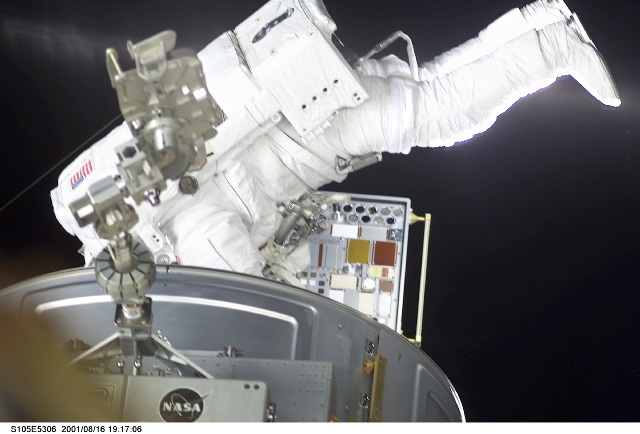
AF experiments

INTERNATIONAL SPACE STATION -- A Space Shuttle Discovery astronaut installs a special carrier on the International Space Station that houses Air Force Research Laboratory experiments. Laboratory scientists are studying a variety of materials and how they react to the space environment as part of the Materials on the International Space Station Experiment managed by the AFRL at Wright-Patterson Air Force Base, Ohio.